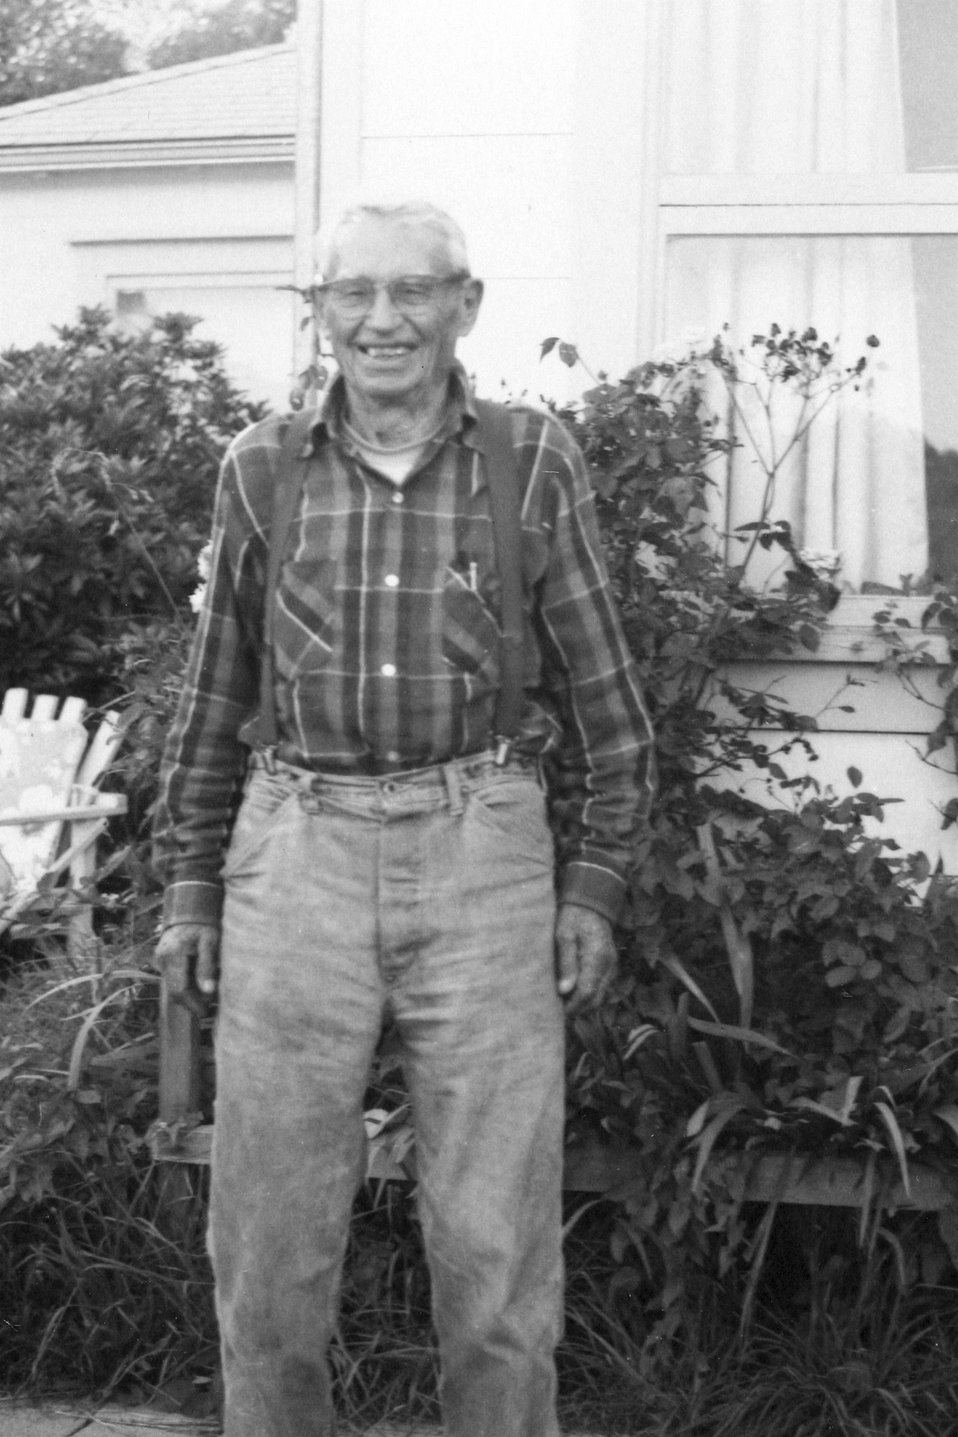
Leo Frye.